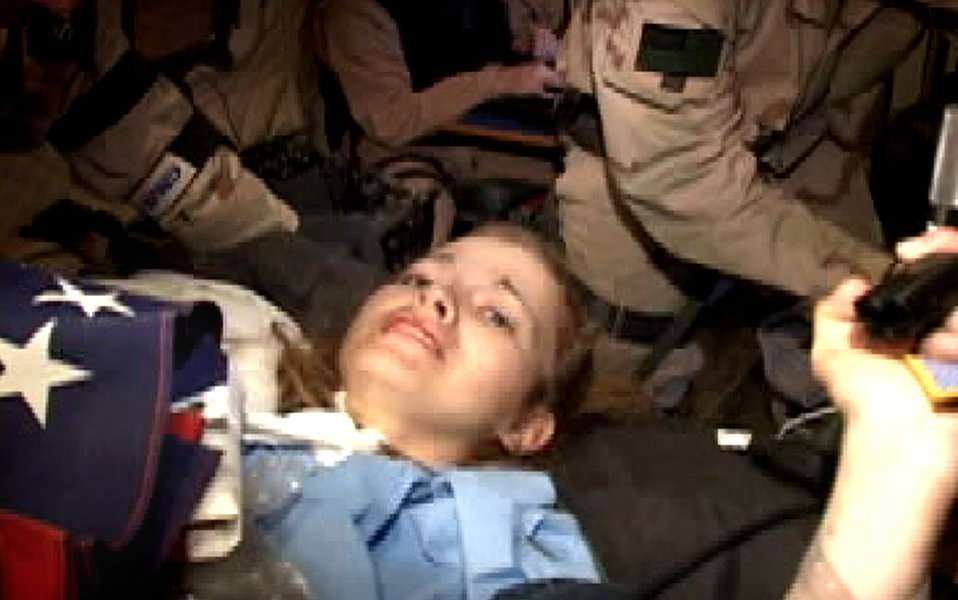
Lynch rescue

OPERATION IRAQI FREEDOM -- An image from video shown during a U.S. Central Command news conference April 2 shows the rescue of Army Pfc. Jessica Lynch on April 1.